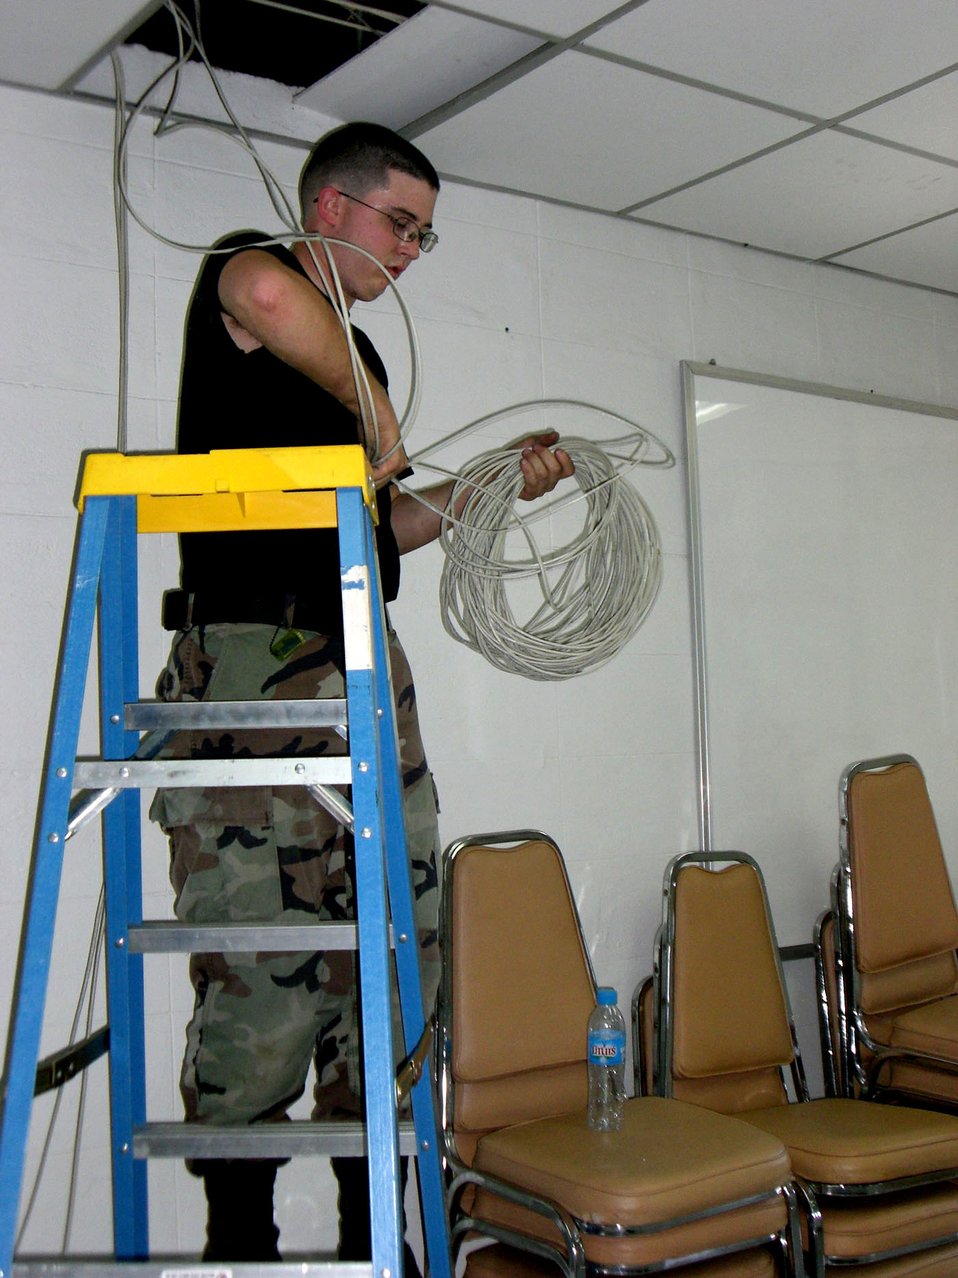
Cope Tiger set to kick off in Thailand

Senior Airman Christopher Reed runs a line from the ceiling into a computer for Internet connectivity in preparation for Cope Tiger 2008 Jan. 20 at Korat Royal Thai Air Base, Thailand. Airman Reed is a theater deployable communications infrastructure specialist from the 18th Communications Squadron from Kadena Air Base, Japan.